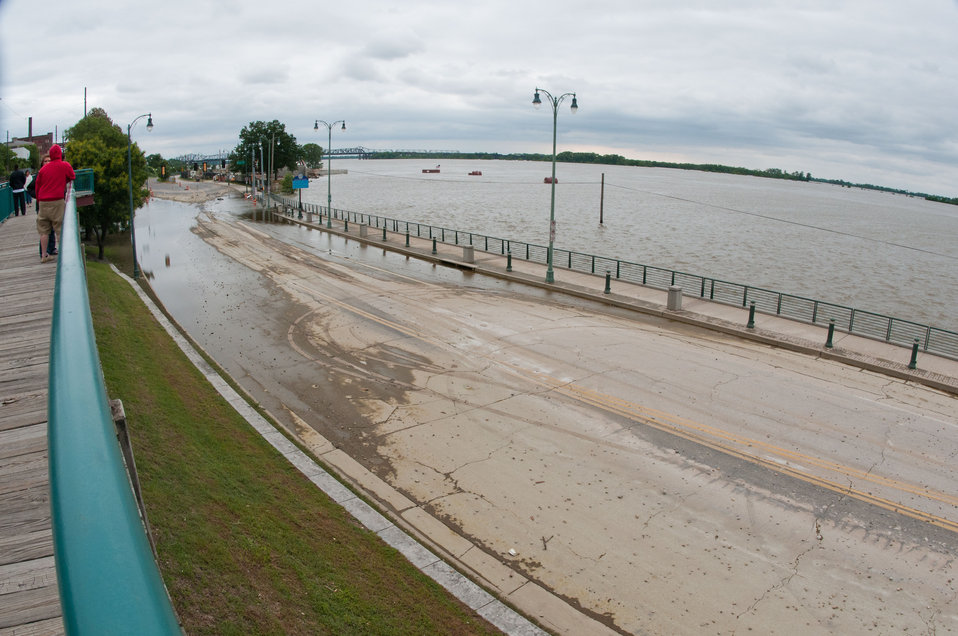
Visitors stroll along a boardwalk to see the flood level and debris littered on a ramp leading to historic Beale Street, in Memphis, TN, on Saturday, May 14. 2011.